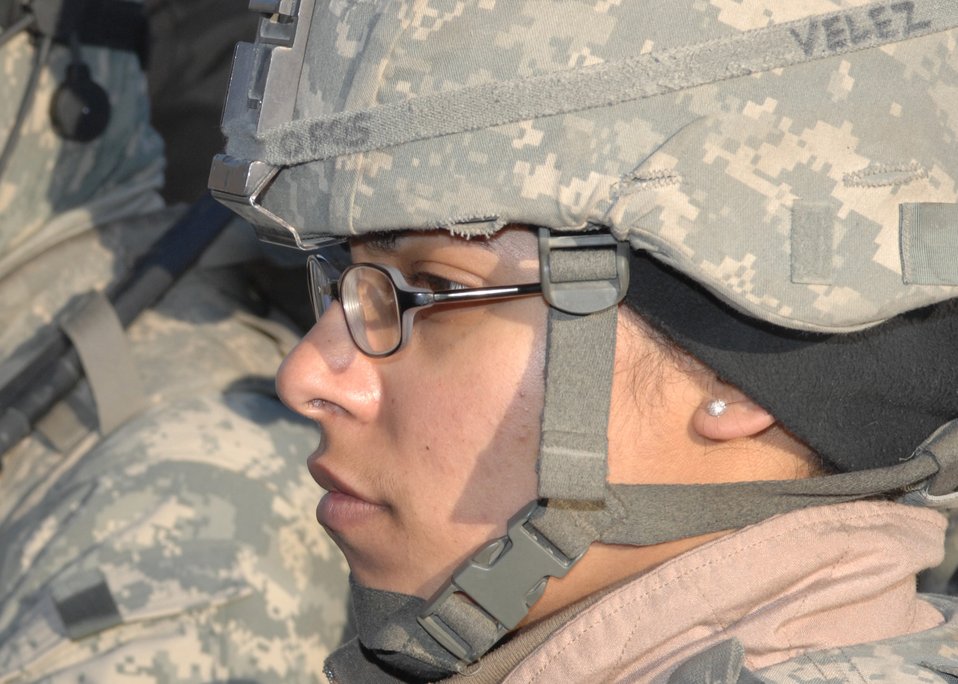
Female Airman from Bronx drives convoys in Afghanistan

Senior Airman Vanessa Velez listens closely to a briefing just before her next mission outside the wire Feb. 10 at Bagram Air Base, Afghanistan. Airman Velez, who is a vehicle maintenance controller with the 6th Logistics Readiness Squadron at MacDill Air Force Base, Fla., has driven at least 120 convoys during her 365-day deployment in Afghanistan. She is a convoy driver with the Bagram Provincial Reconstruction Team.